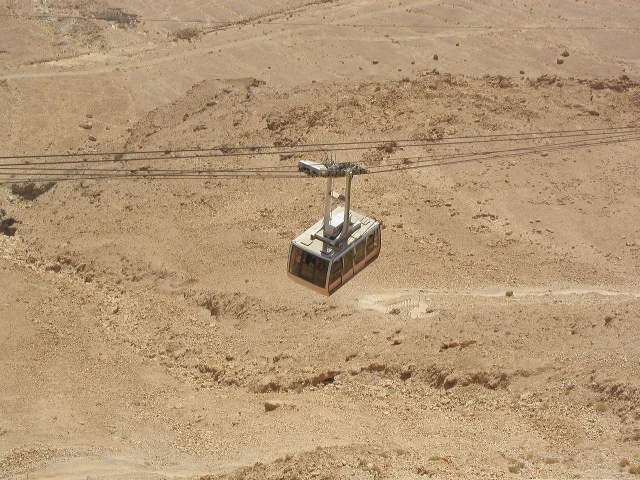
A tram car going down from Masada.